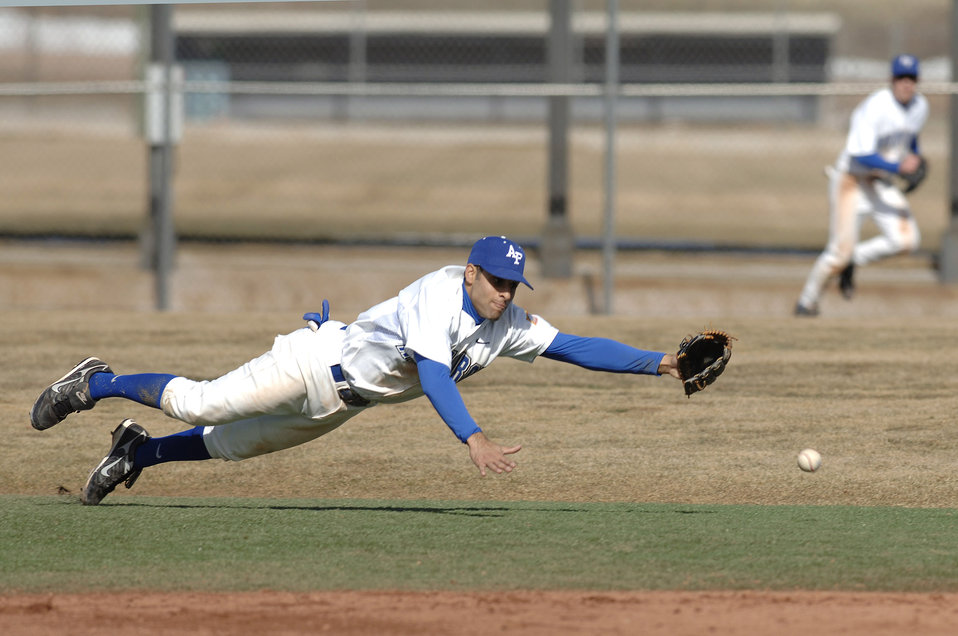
Tough defense

Freshman Air Force Academy cadet KJ. Randhawa dives for a hard-hit ground ball during play against the Northern Colorado University Bears Feb 10. He is the shortstop for the Falcons baseball team.